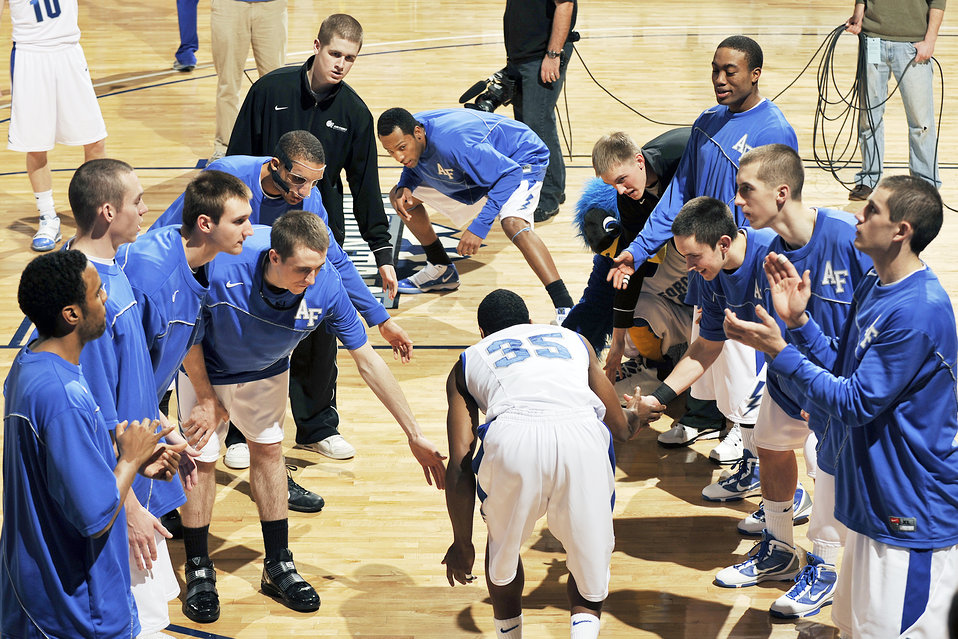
Colorado State beat Falcons

Air Force team introductions take place before the Mountain West Conference matchup against Colorado State at the U.S. Air Force Academy's Clune Arena Feb. 9, 2010. The Rams went on to beat Air Force 51-47 in front of about 1,700 people.